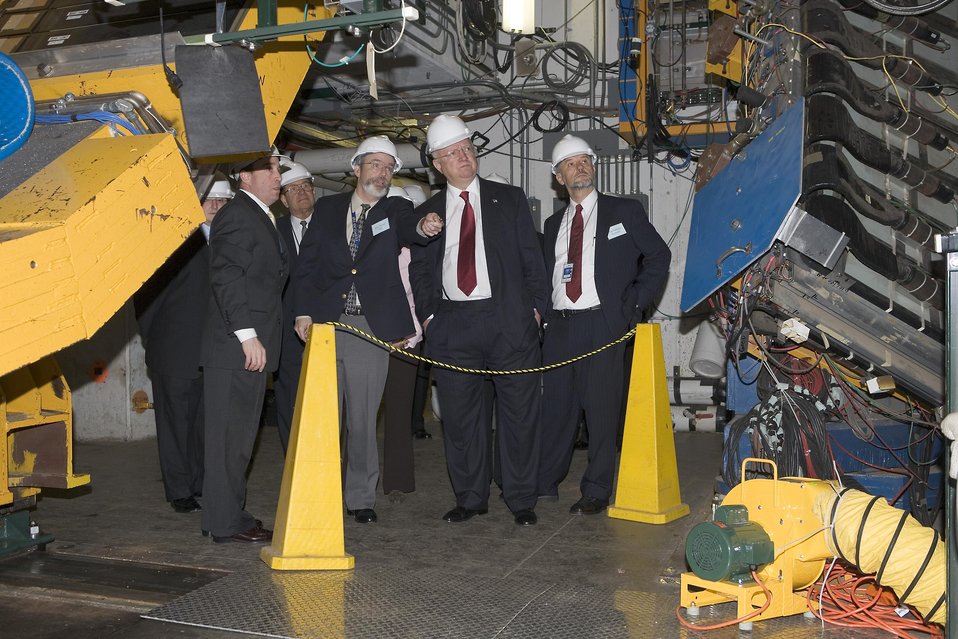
ENERGY SECRETARY SAMUEL BODMAN VISITS FERMI NATIONAL ACCELERATOR LABORATORY ON APRIL 7, 2006, SHOWN HERE WITH PIER ODDONE, DIRECTOR OF FERMILAB